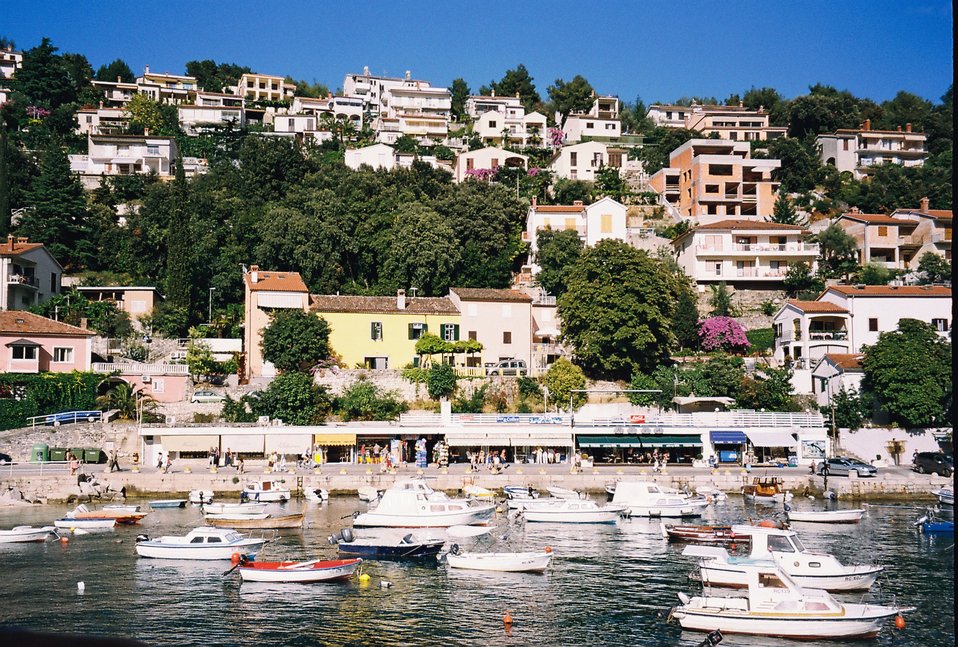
Srpskohrvatski / српскохрватски: Rabac luka